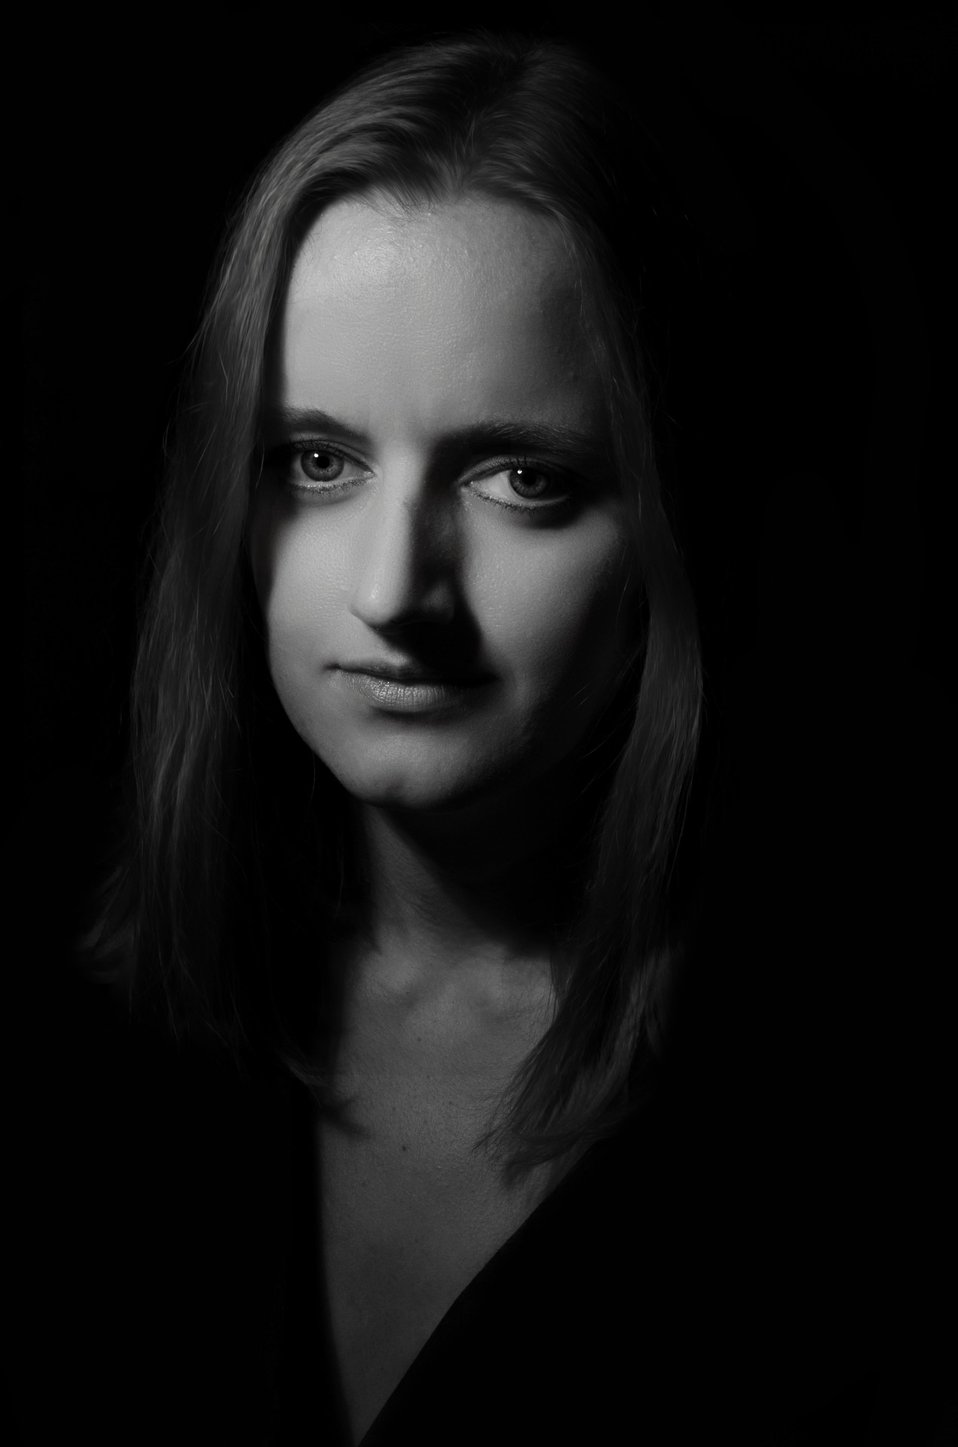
Woman - black and white.